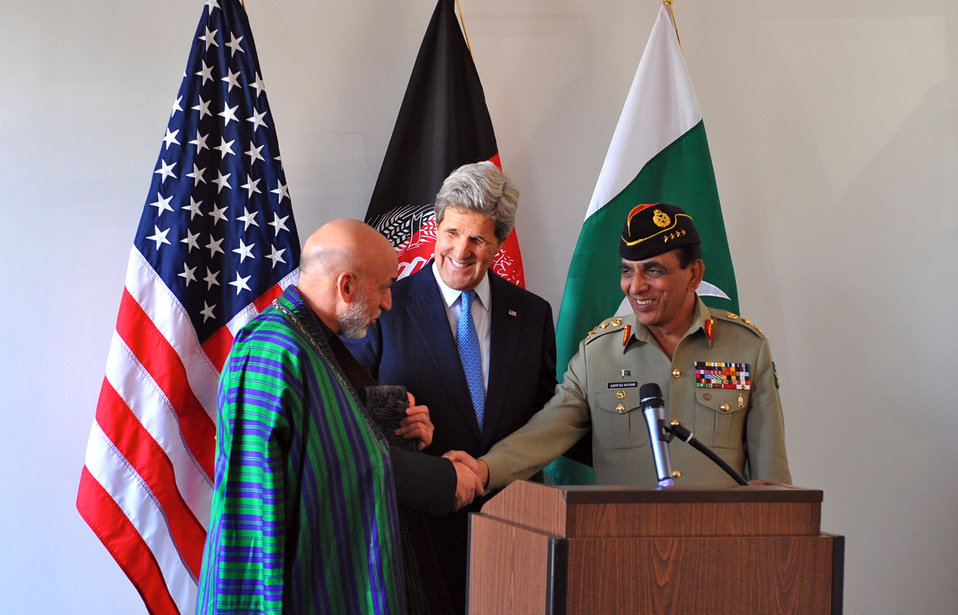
Secretary Kerry Looks on as Afghan President Karzai and Pakistani Chief of Army Staff General Kayani Shake Hands

U.S. Secretary of State John Kerry looks on as Afghan President Hamid Karzai and Pakistani Chief of Army Staff General Ashfaq Kayani shake hands after their trilateral meeting in Brussels, Belgium, on April 24, 2013.